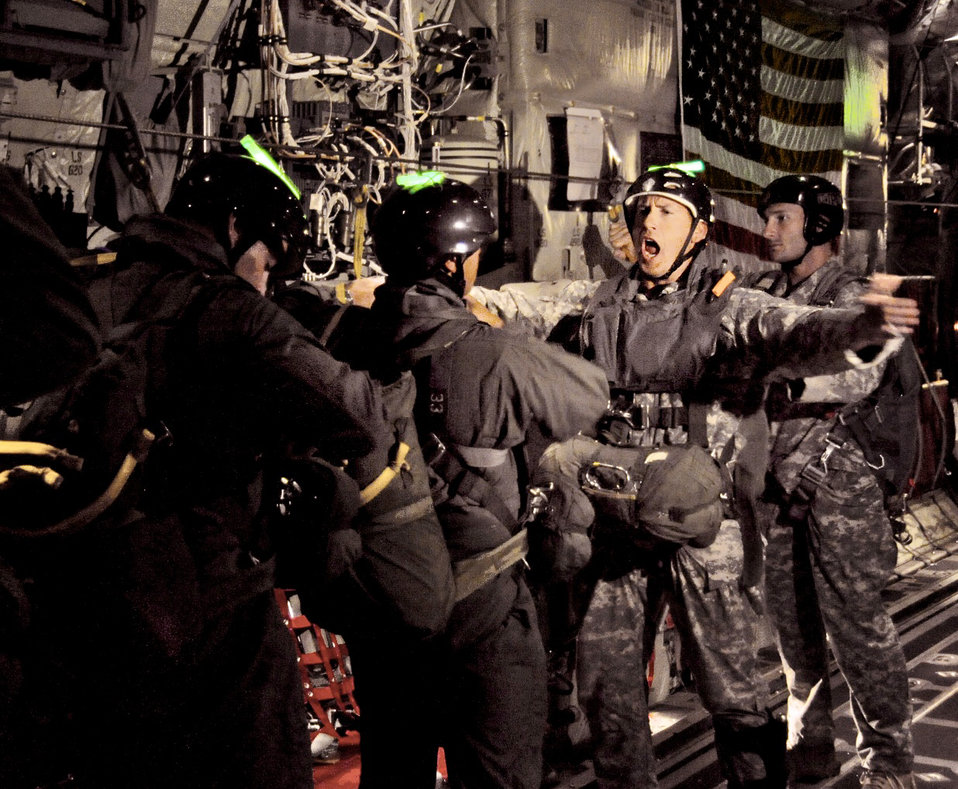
Joint training mission enables reservists to train as they fight

Master Sgt. Lyle Michael signals the students to prepare to jump from the C-130J Super Hercules April 12, 2010, over Key West, Fla.